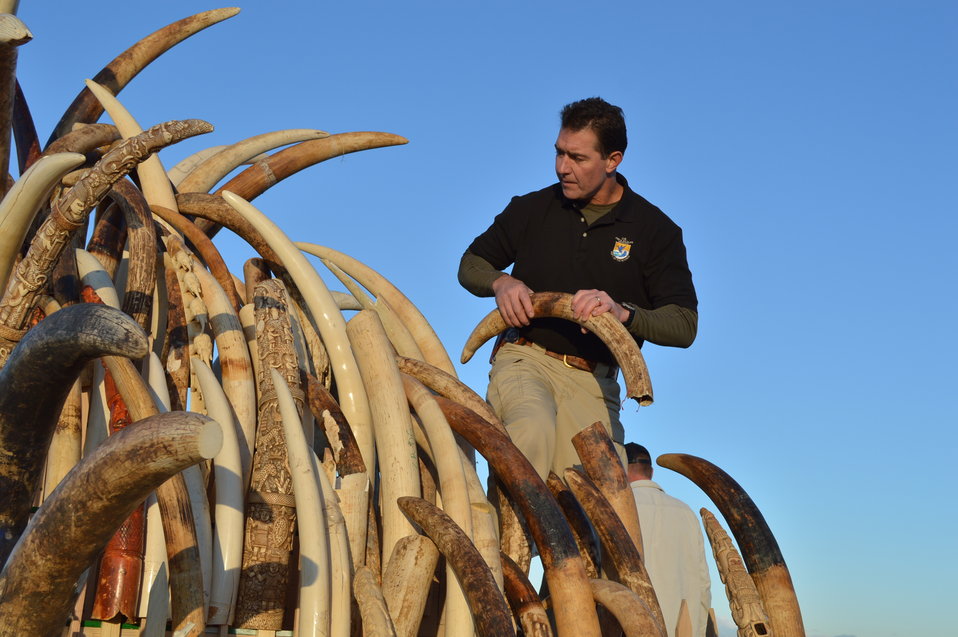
Steve Oberholtzer, USFWS assembling ivory tusks on a tower for display before crushing